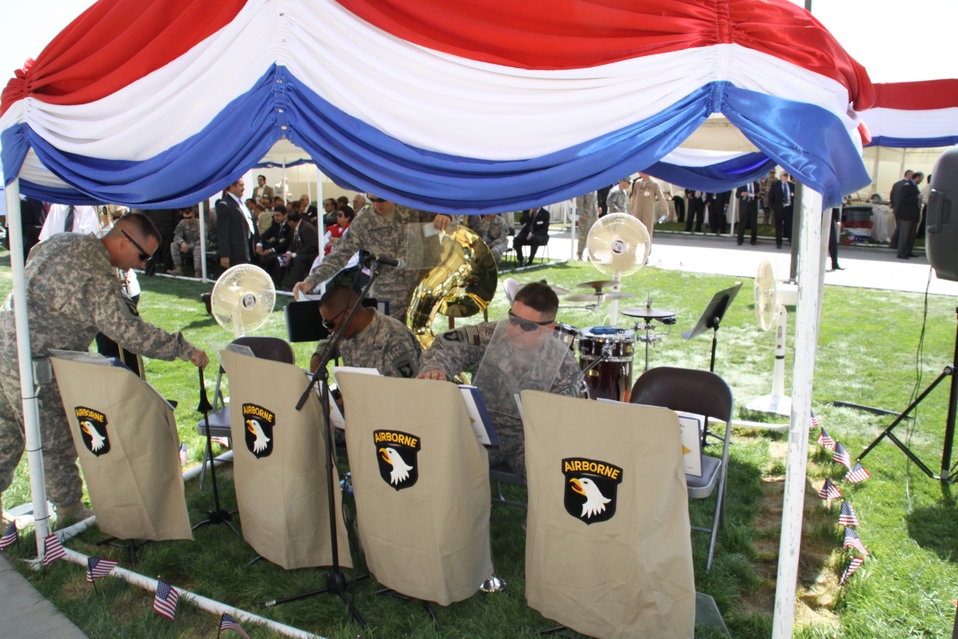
Kabul Official July 4th Celebration